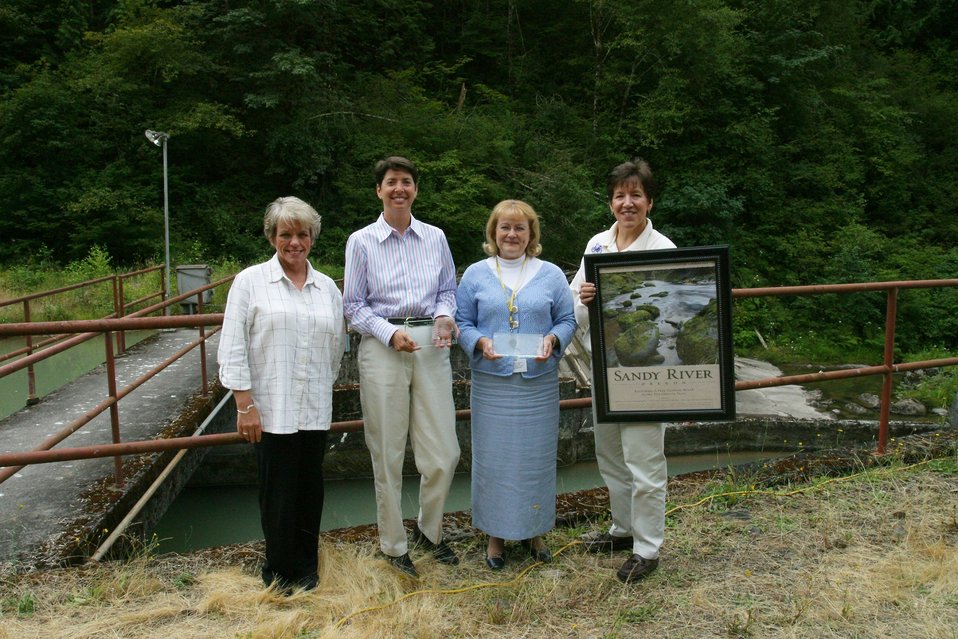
Kathleen Clarke (left), BLM Director, and Elaine Brong (right), BLM Oregon State Director, present the Four C's Award at the Little Sandy Dam to the Western River Conservancy Vice President, Sue Doroff (second from left), and President of Administration for PGE, Arleen Barnett (third from left),